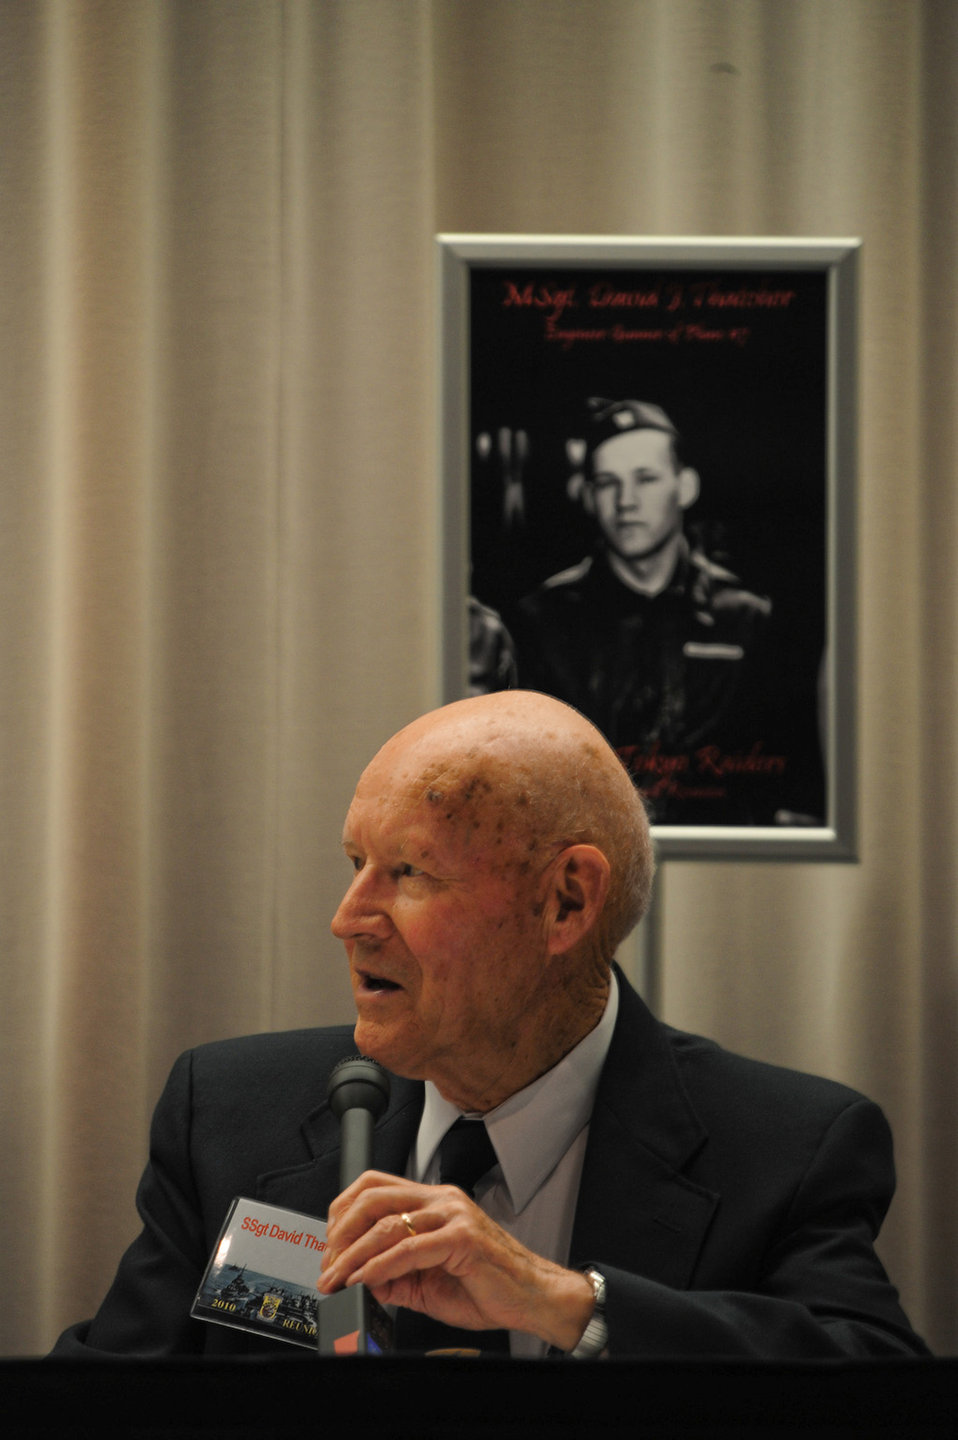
68th Doolittle Raiders Reunion

U.S. Air Force Master Sgt. (ret.) David J. Thatcher, engineer-gunner of the seventh B-25 Mitchell Bomber that took part in the Doolittle Tokyo Raid, attends a press event at the National Museum of the U.S. Air Force at Wright Patterson Air Force Base, Ohio, April 16, 2010. The Doolittle Raiders' 68th reunion commemorates the anniversary of the Doolittle Tokyo Raid on April 18th, 1942, when U.S. Army Air Forces Lt. Col. Jimmy Doolittle's squad of 16 B-25s bombed targets in response to the Japanese attack on Pearl Harbor.